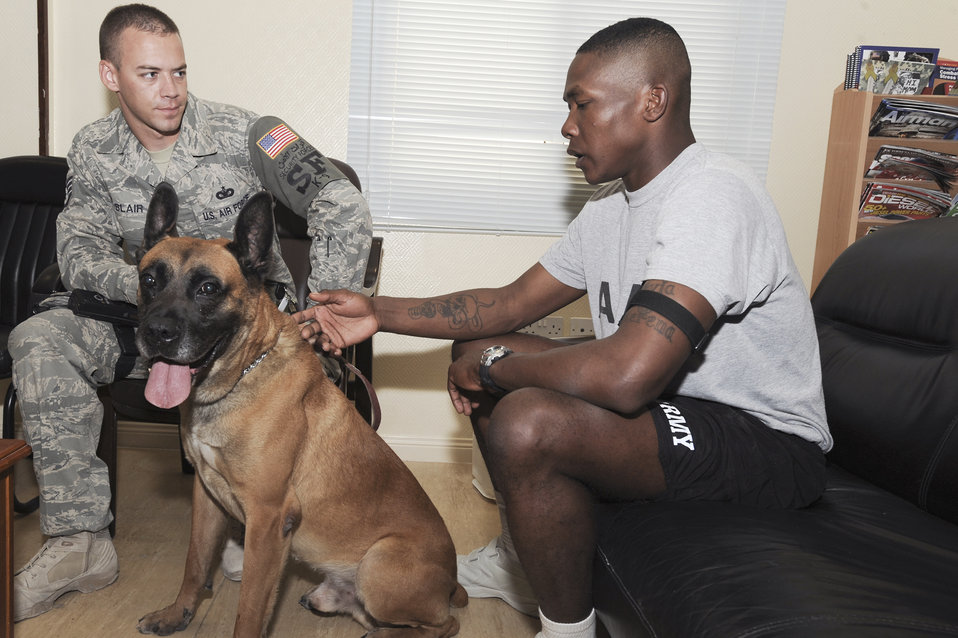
Medics, volunteers help servicemembers recover for duty

Staff Sgt. Randall Blair talks about his military working dog, Midas, to Army Staff Sgt. Kaviraz German, from Fort War Horse, Iraq, March 24 at an air base in Southwest Asia. Sergeant German is enrolled in the In-Theater Care Program which uses various events like this to assist patients recovering from minor surgeries or other medical problems. Sergeant Blair is a K-9 handler with the 379th Expeditionary Security Forces Squadron, and is deployed from Shaw Air Force Base, S.C., with Midas. Sergeant German is deployed out of Fort Wainwright, Alaska.